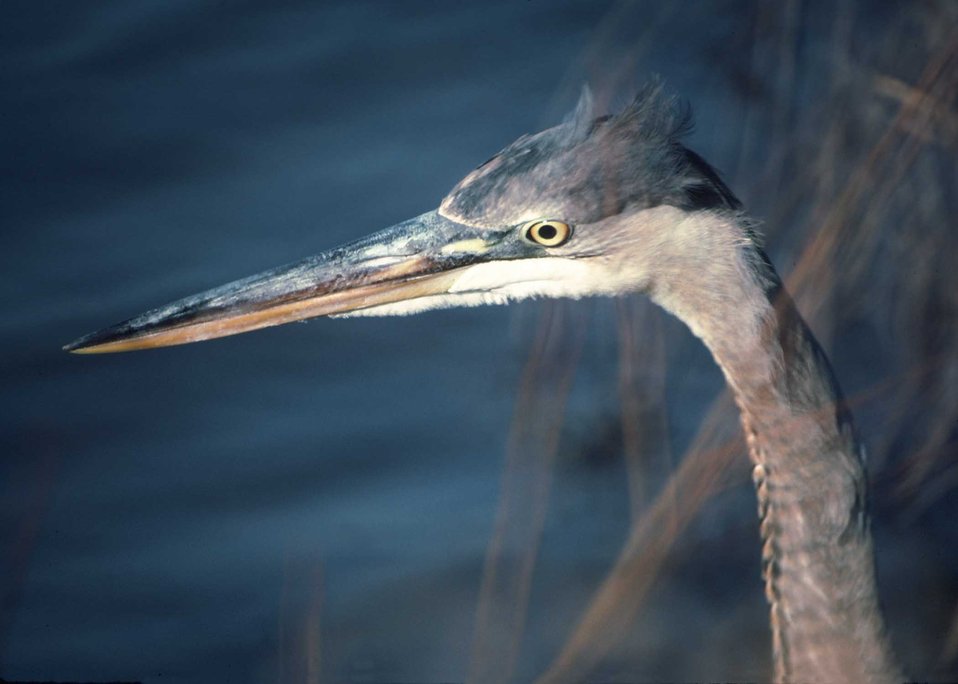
A great blue heron waits for his dinner on Maryland's Eastern Shore.